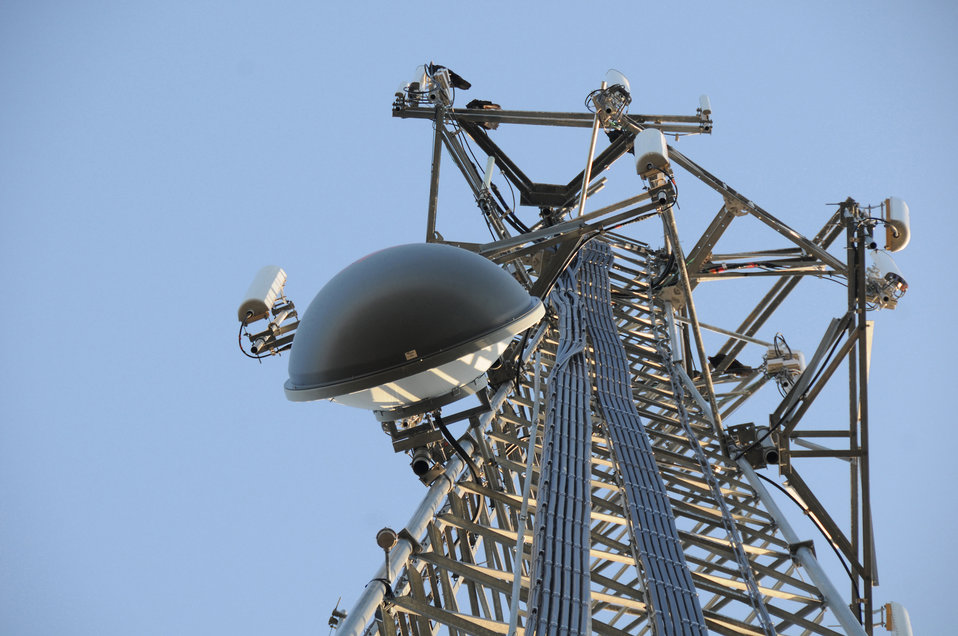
The construction of cell towers with Fiber Optic Service (FIOS) capabilities to expand cell and internet access in Medicine Park, Oklahoma was possible through the American Recovery and Reinvestment Act (ARRA) funding provided to the U.S. Department of Agriculture (USDA) Rural Development (RD) Housing and Community Facilities Programs on August 8, 2009. The construction of the cell towers was done by the Hilliary family, which started in 1958 and is still in the telephone service business. They expanded their business by constructing cell towers to serve the surrounding communities in western Oklahoma.